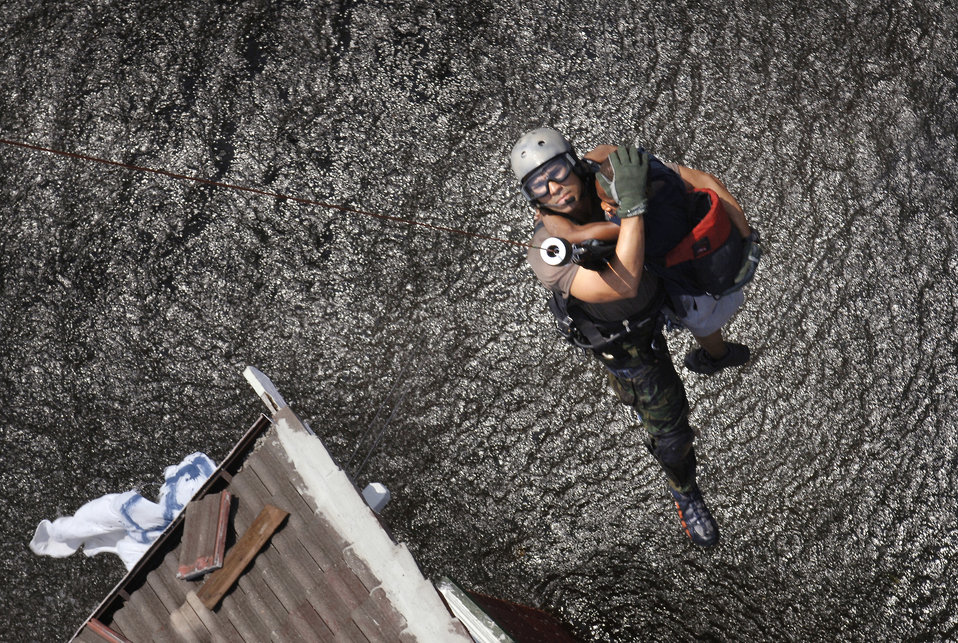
Hoist rescue

NEW ORLEANS -- Tech. Sgt. Lem Torres and a young boy are lifted to safety from the roof of the child's flooded home. The pararescueman is from the 38th Rescue Squadron at Moody Air Force Base, Ga., and is deployed to New Orleans for Hurricane Katrina search-and-rescue operations